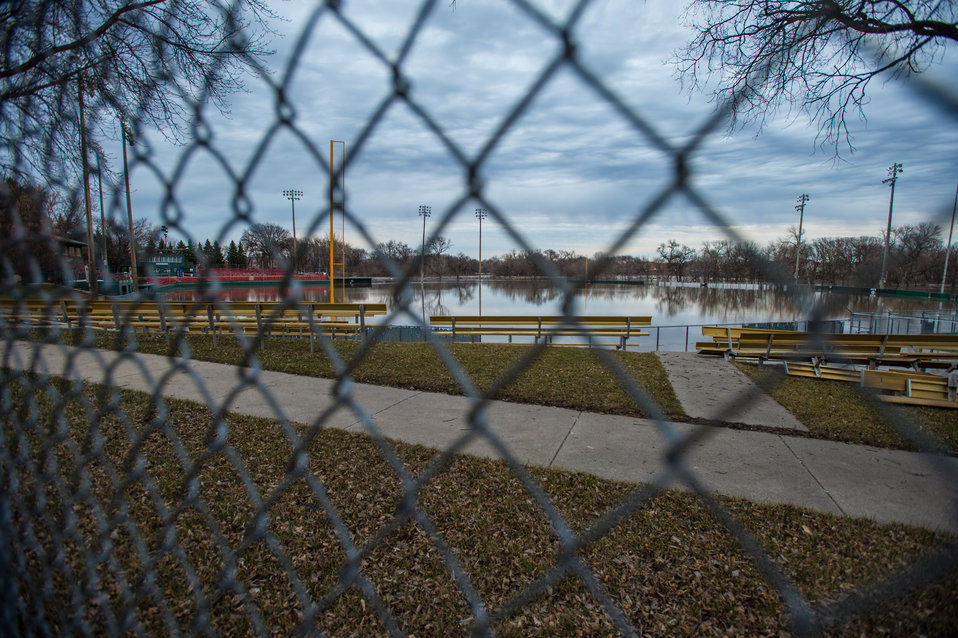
View of Jack Williams Stadium facility in Mickelson Field, with Red River flood waters, at 11th Ave. N. and Elm St. in Fargo, N.D. on Monday, Apr. 29, 2013. To learn about the Red River Basin Initiative, see www.mn.nrcs.usda.gov/news/features13/RRBI.html.